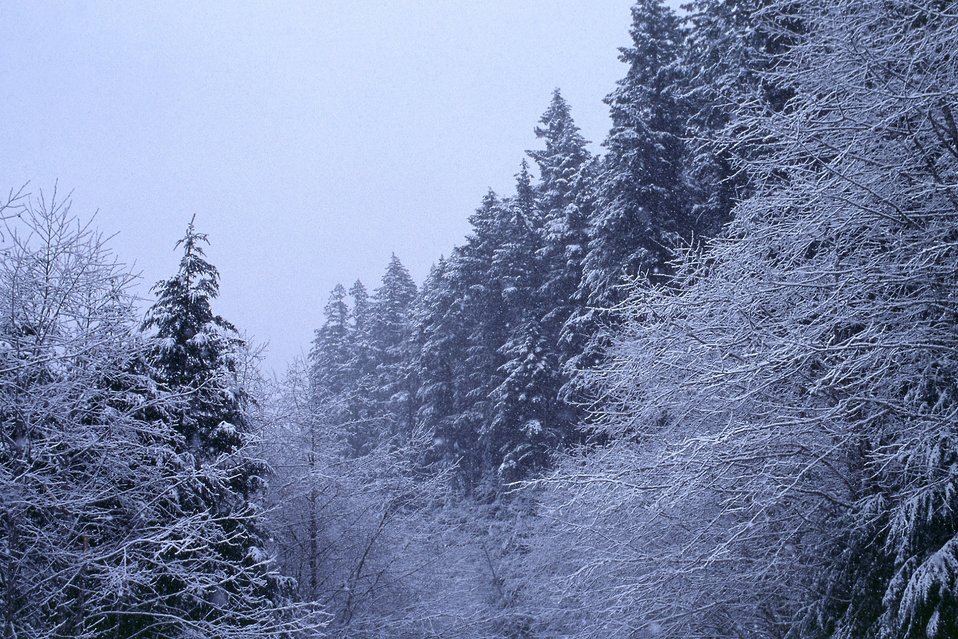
Mid Winter forest scene in the Mollala Corridor.